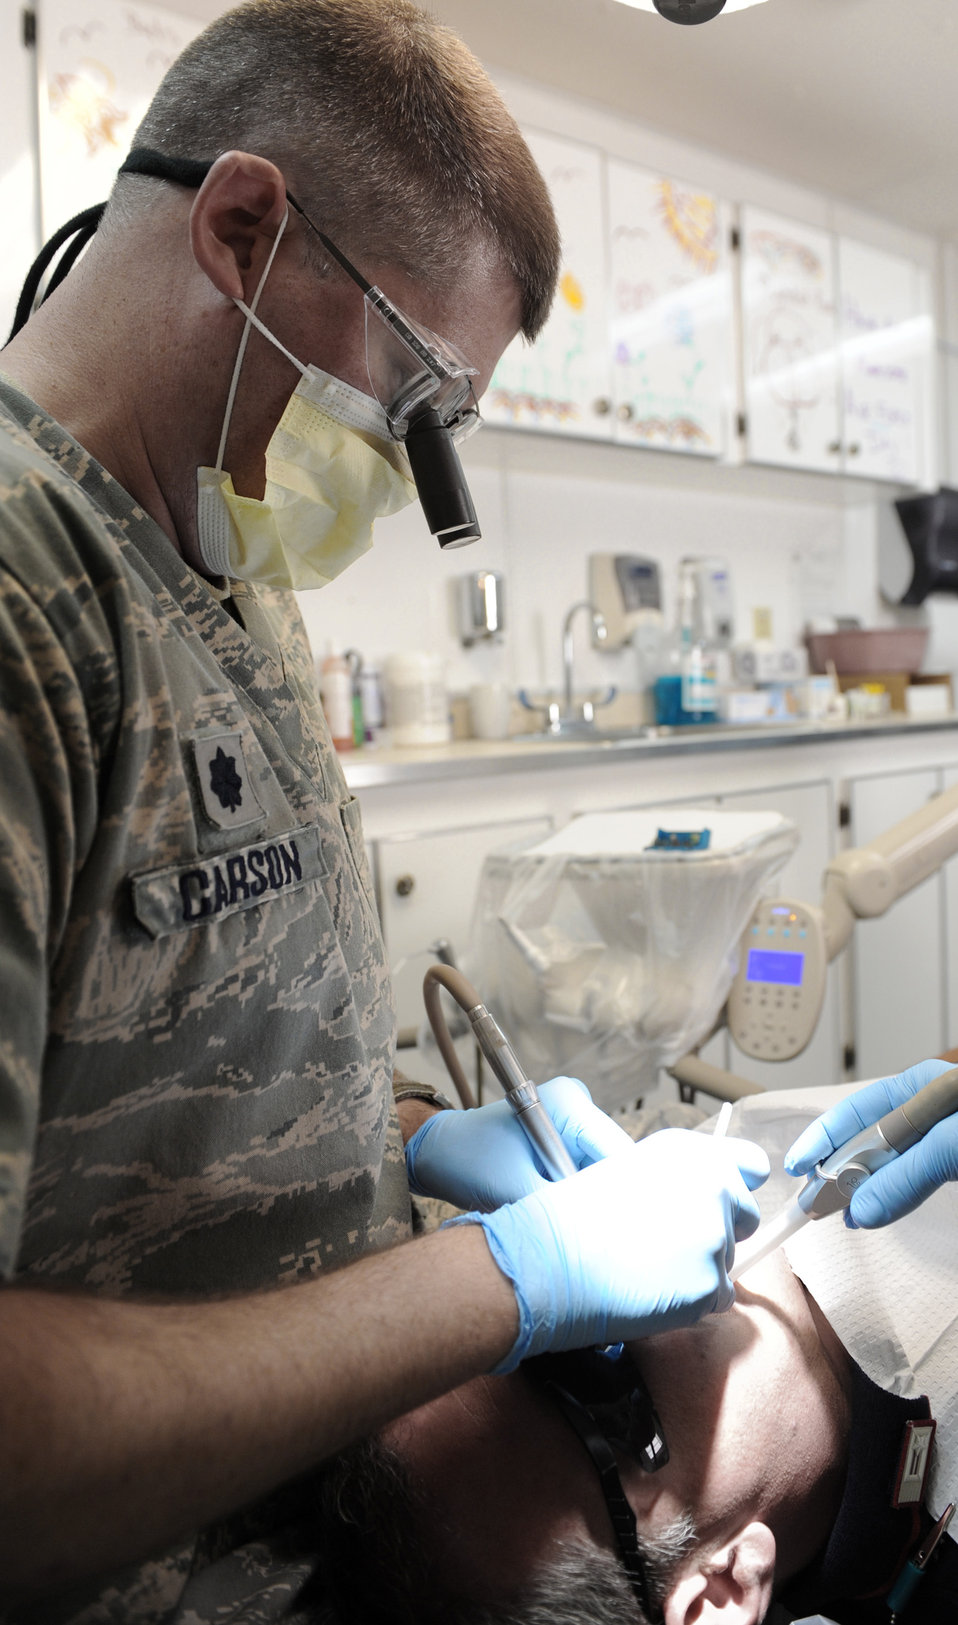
Guardsmen care for wounded warriors

Lt. Col. Clarence Carson, an 447th Expeditionary Medical Support Squadron dental-services chief, performs a dental procedure on a patient at Sather Air Base June 12. Colonel Carson, a native of Yankton, S.D., is deployed here from the 185th Air Refueling Wing in Sioux City, Iowa.